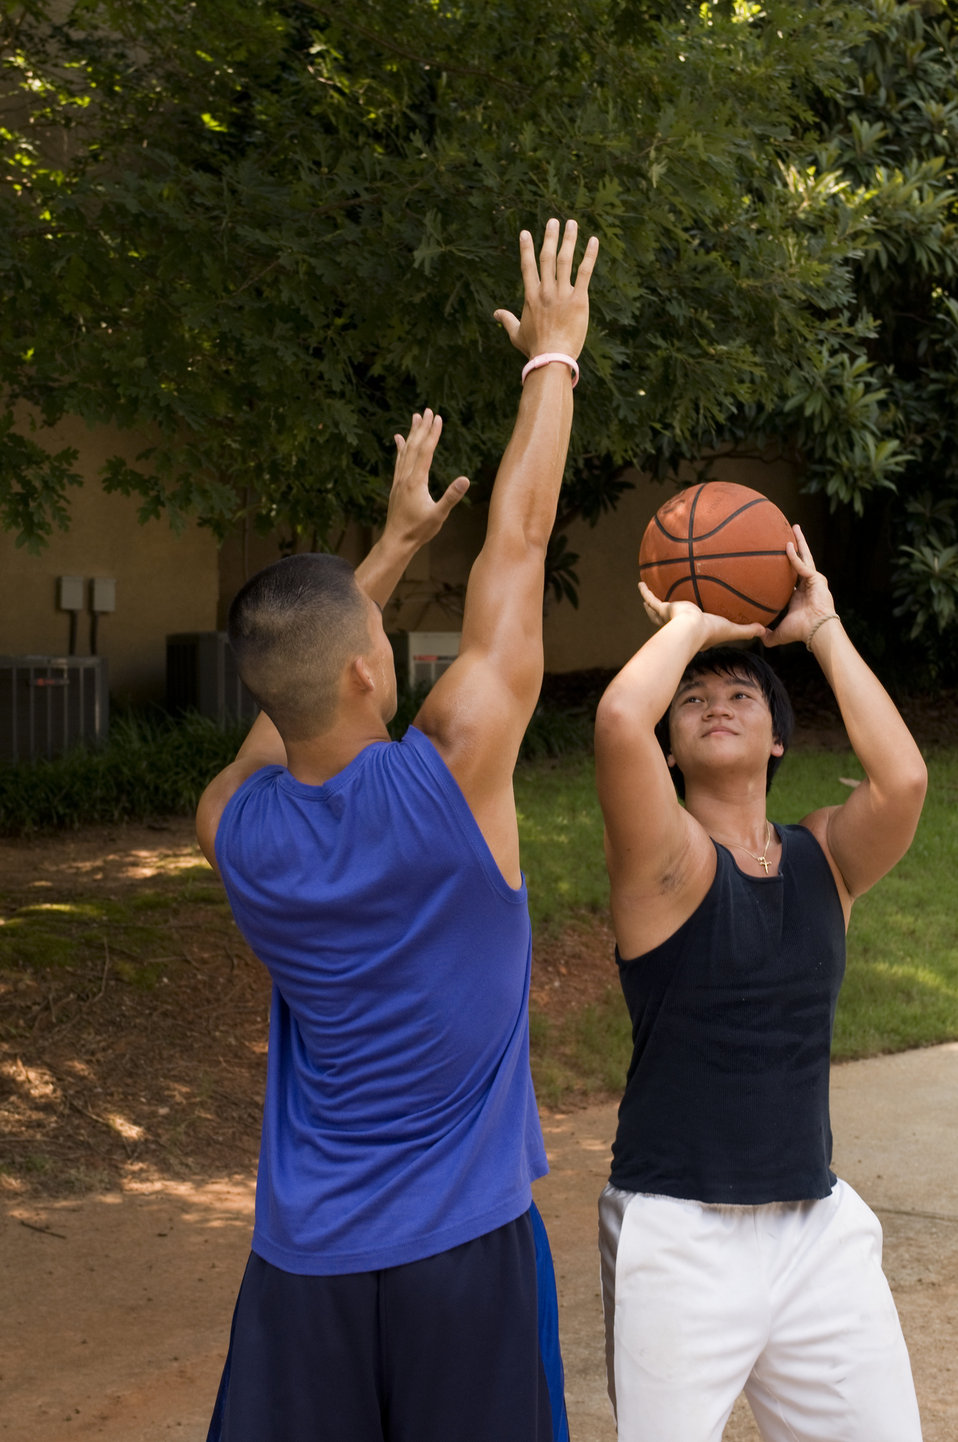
These young men were practicing their moves on a basketball court during a casual game on a nice sunny Georgia day. In this particular view, they were playing one-on-one. The man on the right, wearing his darkly-colored top, was in the process of taking his shot, while the man at left, wearing his bright blue top, was attempting to block the shot by placing his right hand in the path of the ball. Being that this was an outdoor game, sunscreen had been applied to their sun-exposed skin. Hopefully, they'd packed, or had access to some drinking water, which would keep them hydrated in the heat.